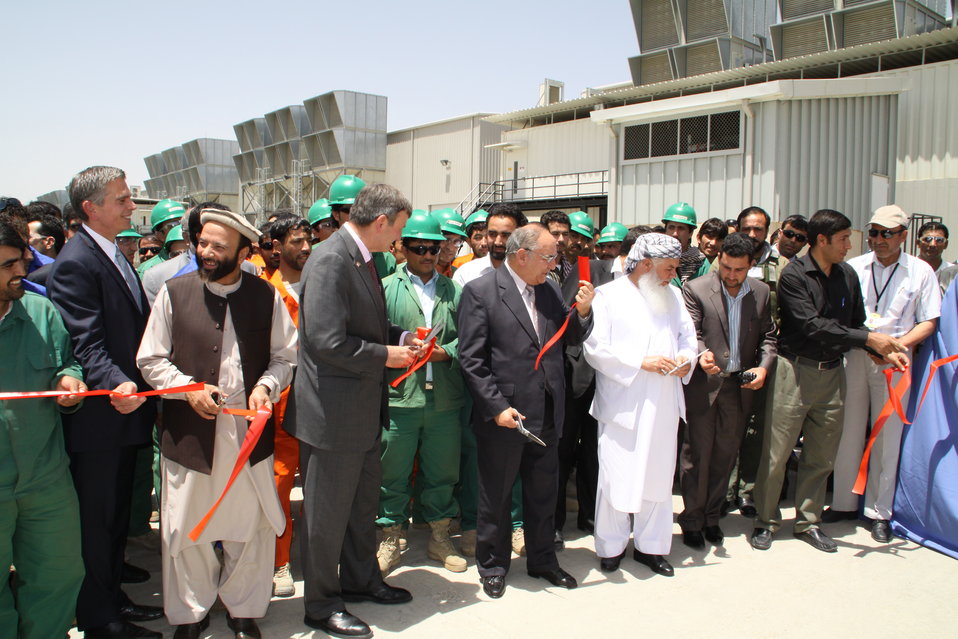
105 MW Tarakhil Power Plant Handover